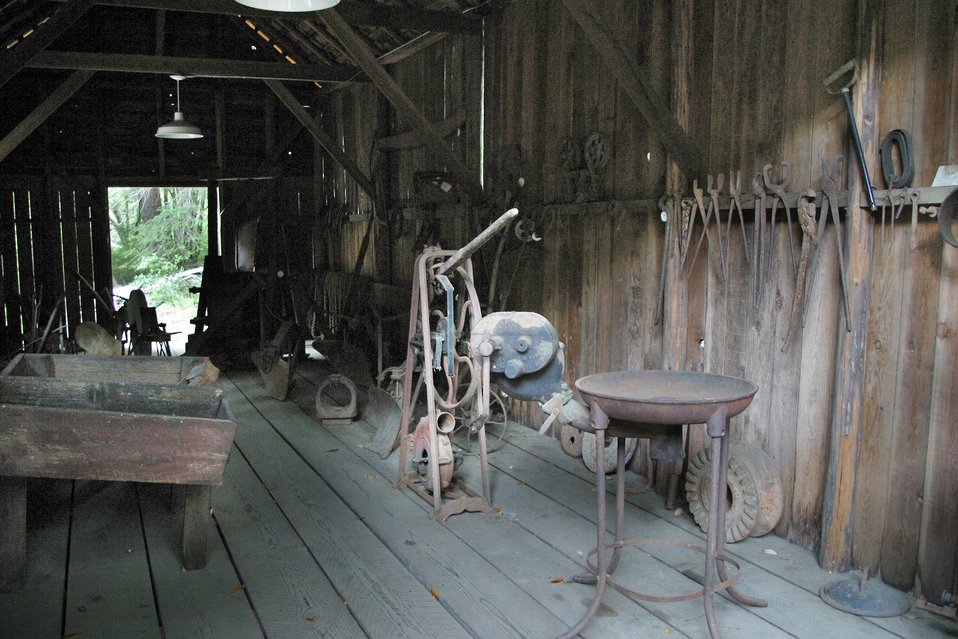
An interior view of the blacksmith shop at Rogue River Ranch.